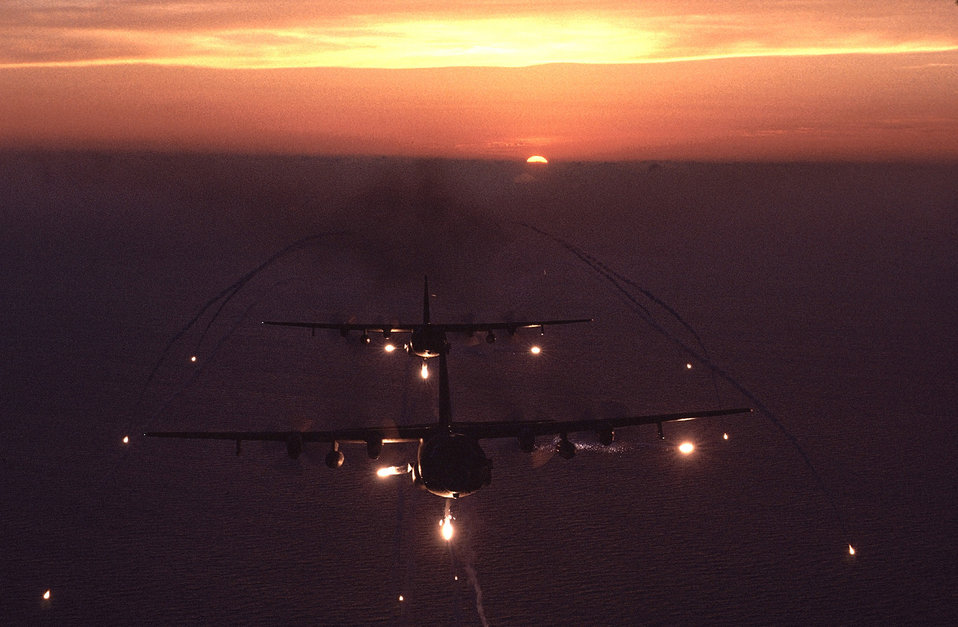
Special operations

OFF THE COAST OF FLORIDA -- Two 16th Special Operations Wing MC-130 Combat Talons fly along the coastline. The 16th SOW specializes in unconventional warfare. At the direction of the National Command Authorities, the 16th SOW goes into action with specially trained and equipped forces from each service working as a team to support national security objectives. Special operations are often undertaken in enemy-controlled or politically-sensitive areas and can cover a myriad of activities. The 16th SOW's motto is,